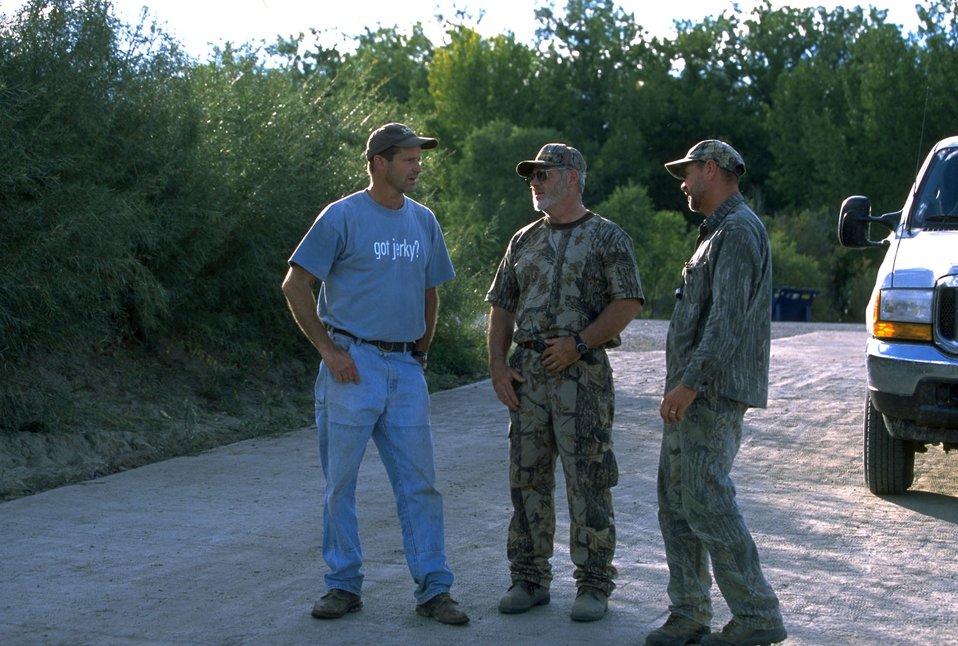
Enjoying Kipp Recreation Area